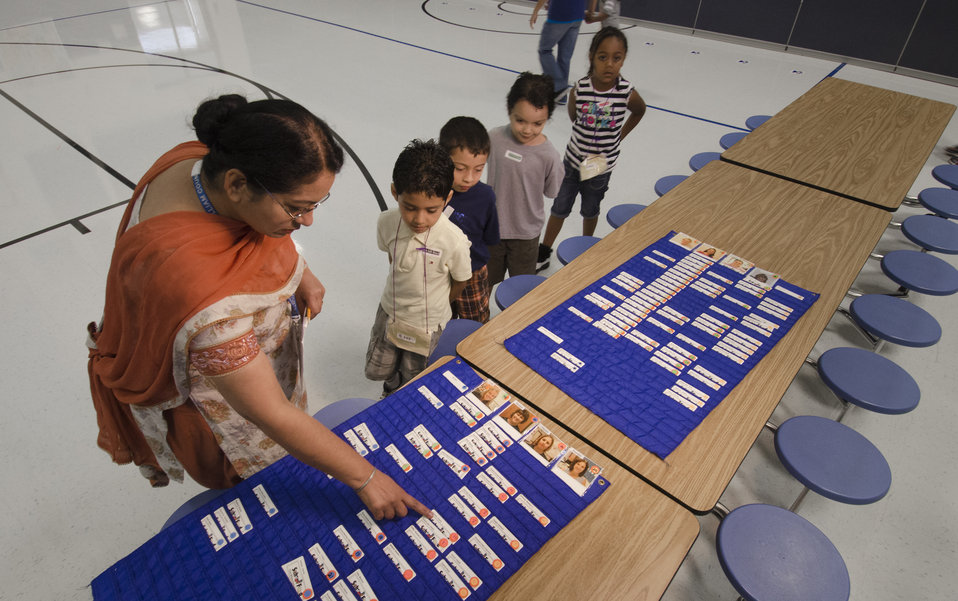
School lunch staff and students enjoy the new school lunch menu created to meet the new standards at the Yorkshire Elementary School in Manassas, VA on Friday, Sept. 7, 2012.